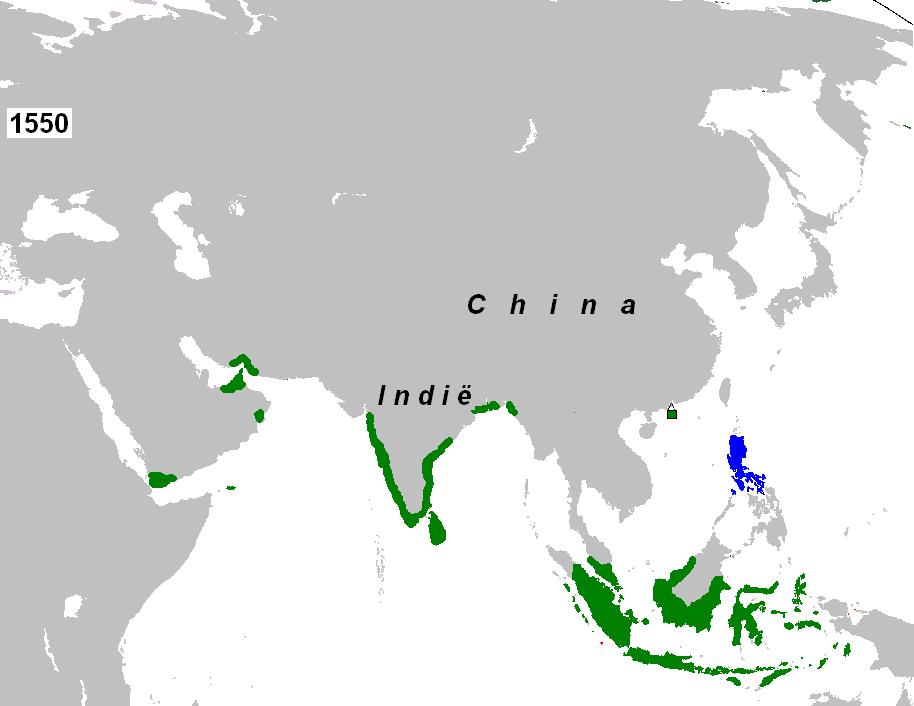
Nederlands: Kolonisaties van Asië in 1550 Colonisation of Asia in 1550